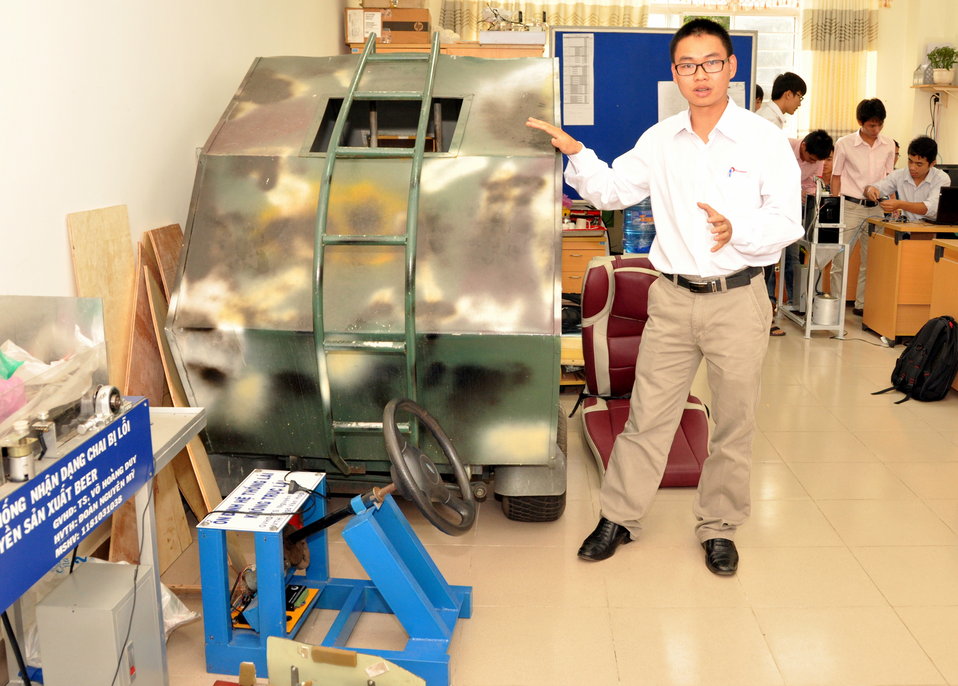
Ho Chi Minh City University of Technical Education, HEEAP Partner

Faculty Member Nguyen Ba Hai
January 11, 2013